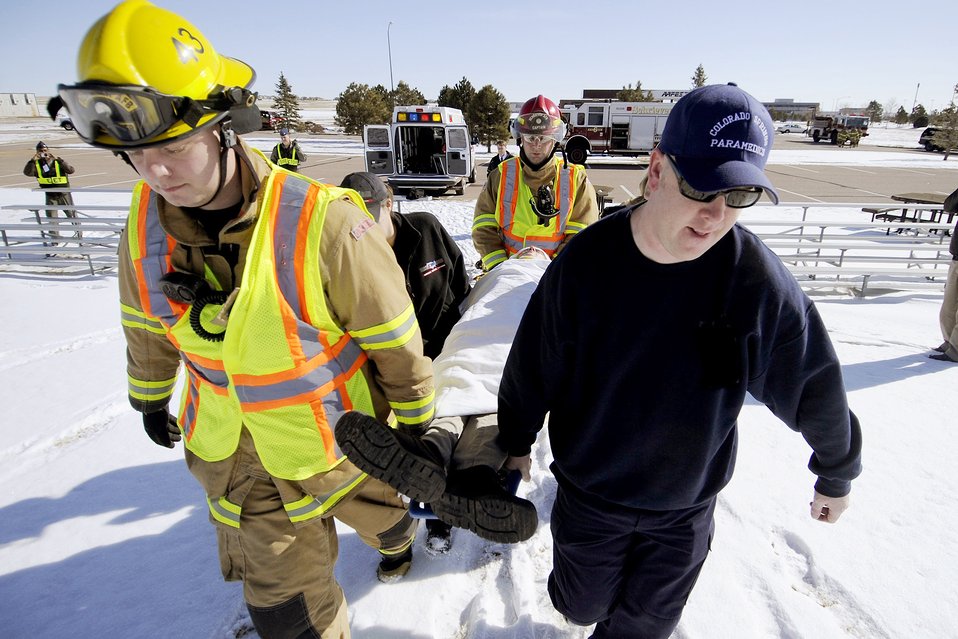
Schriever trains for emergencies

Base emergency services members and paramedics from the Flight for Life Colorado crew carry a